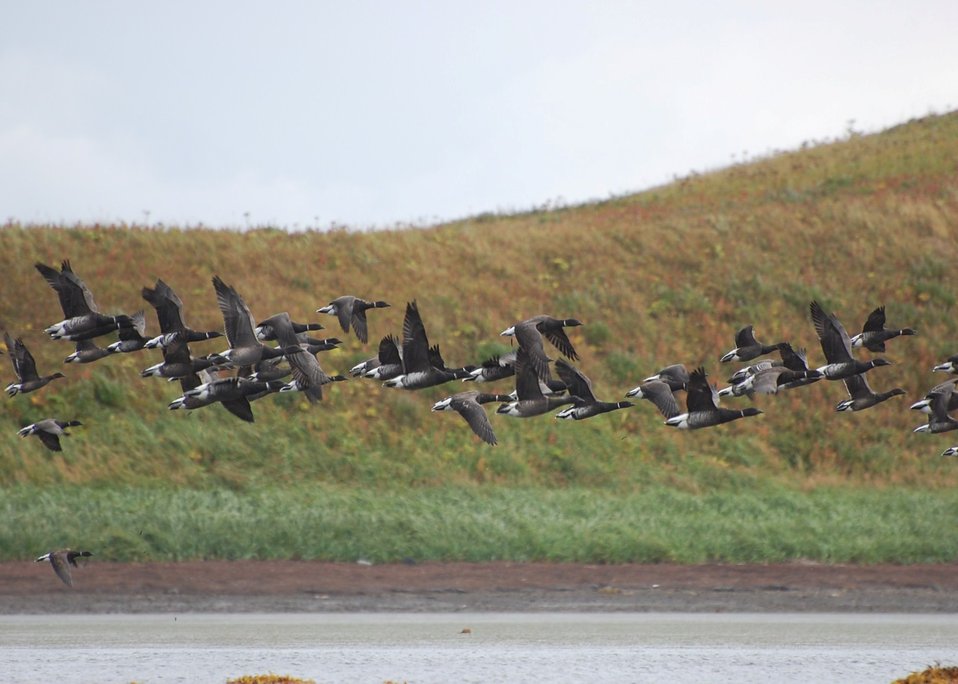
Brant Liftoff

Brant at Izembek Lagoon, Izembek National Wildlife Refuge